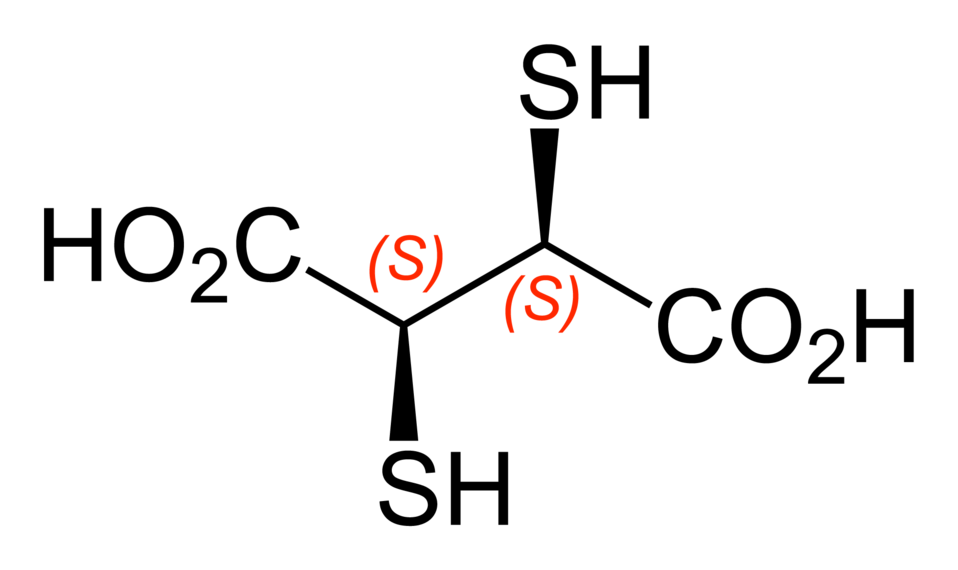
Skeletal formula of (2S,3S)-2,3-dimercaptosuccinic acid, C4H6O4S2. Structure drawn in ChemBioDraw Ultra 12.0.